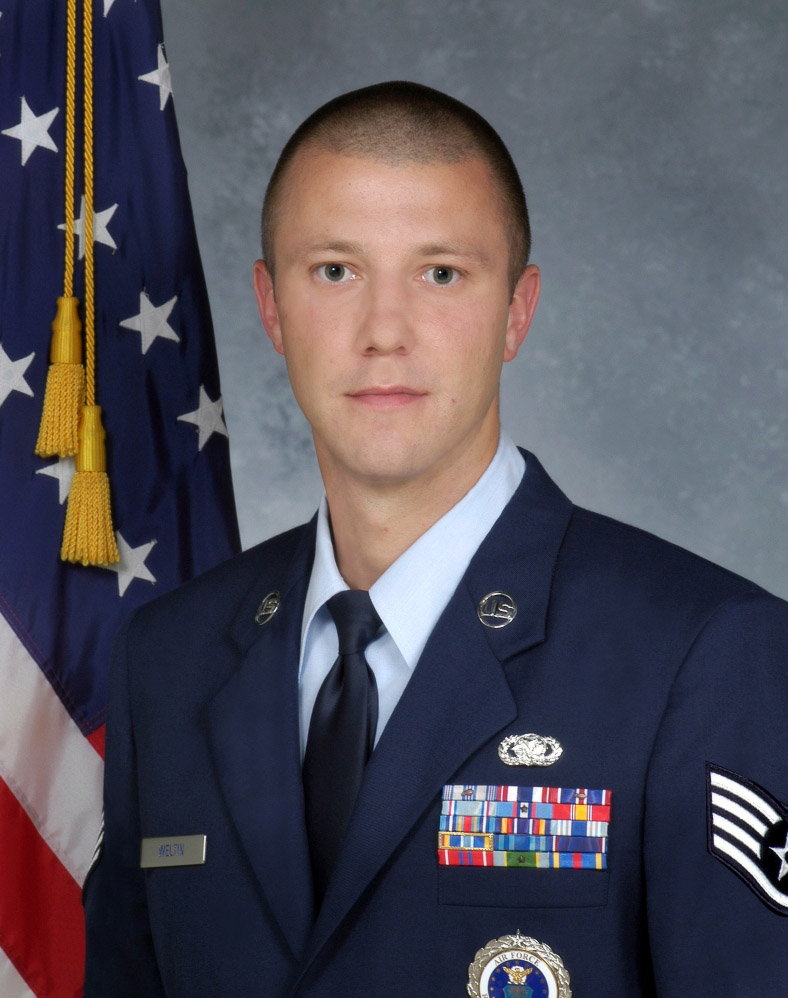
Air Force officials honor 12 Outstanding Airmen of the Year

Staff Sgt. James Weltin of Patrick Air Force Base, Fla., is one of the 12 Outstanding Airmen for 2008.